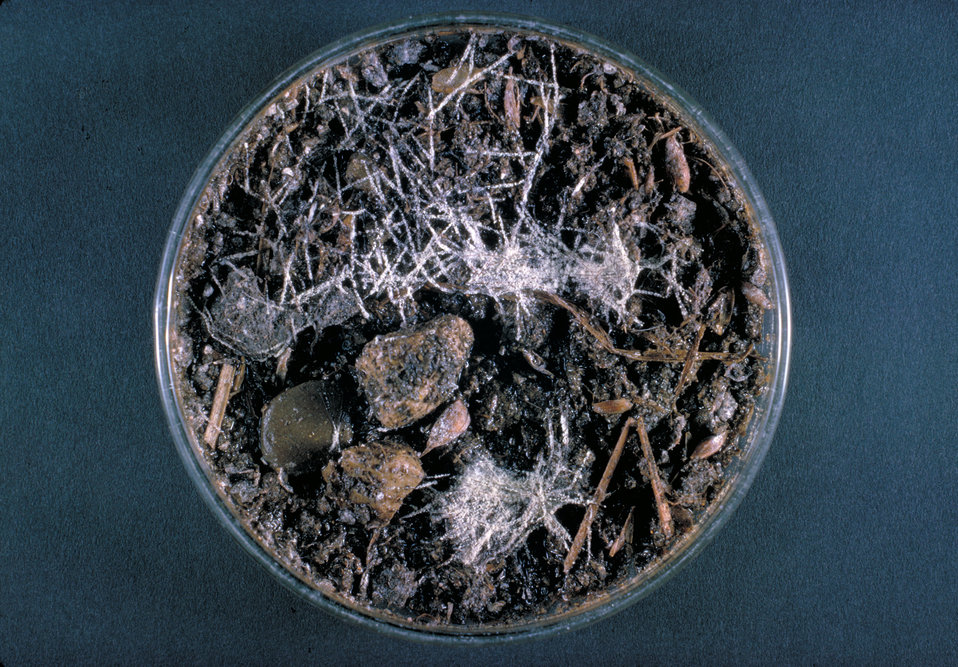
His hair-plate culture is growing the fungus Chrysosporium keratophilium.